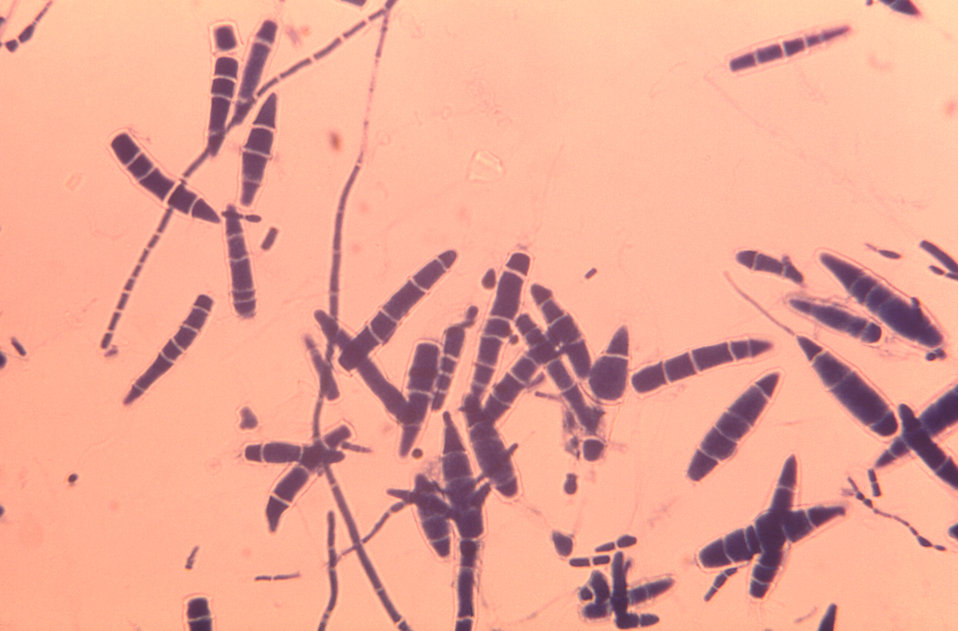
Under a high magnification of 475X, this photomicrograph depicted some of the ultrastructural features of numerous oblong-shaped Microsporum gypseum macroconidia from what is known as a red, powdery, mutant strain.